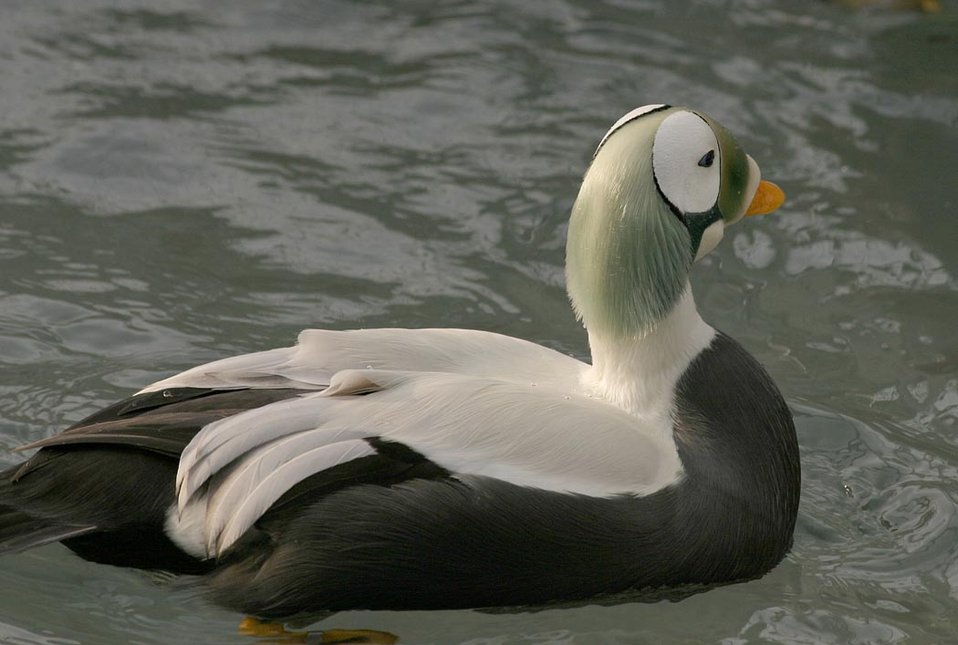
Threatened spectacled eider male (Somateria fischeri), Alaska SeaLife Center, Seward, Alaska